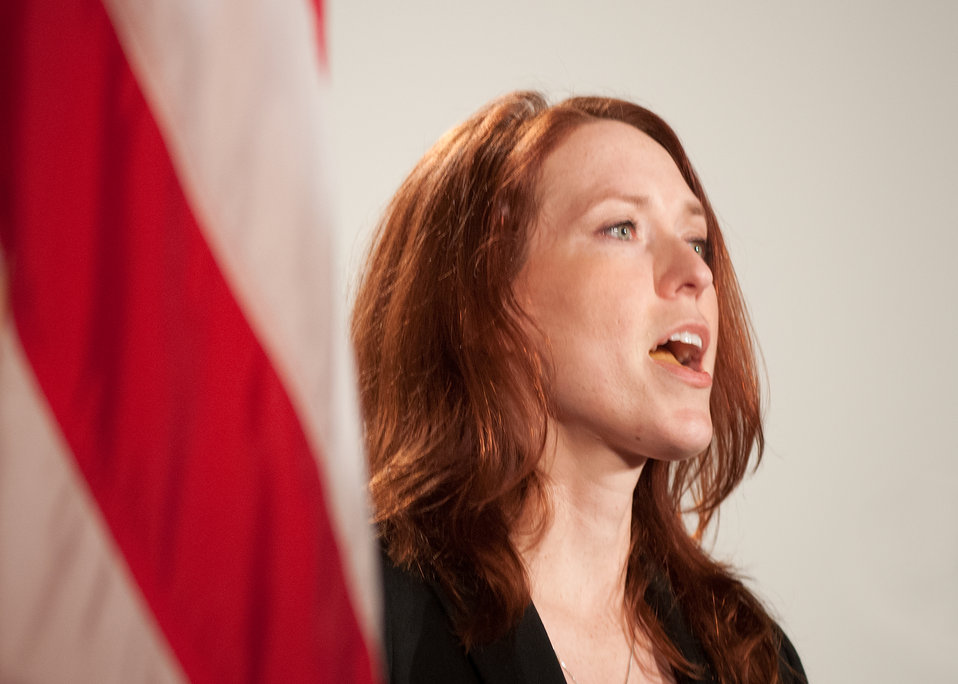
Rebecca Blue, Deputy Under Secretary, Marketing and Regulatory Programs sang the National Anthem at the National Service Day and Martin Luther King Celebration in honor of Dr. Martin Luther King Jr.’s contributions to the Civil Rights Movement at the United States Department of Agriculture in Washington, D.C., Thursday, January 12, 2012.